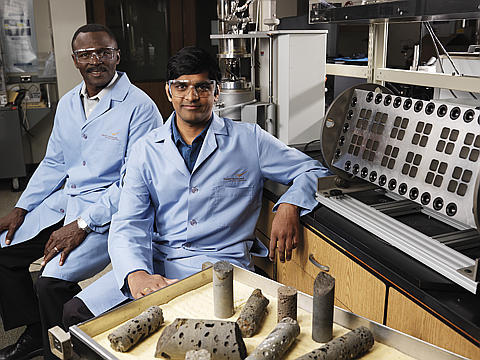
At Pacific Northwest National Laboratory, one option for reducing greenhouse gas buildup in the atmosphere is storing it deep underground. Laboratory experiments confirm that carbon dioxide is effectively trapped when injected into basalt formations.